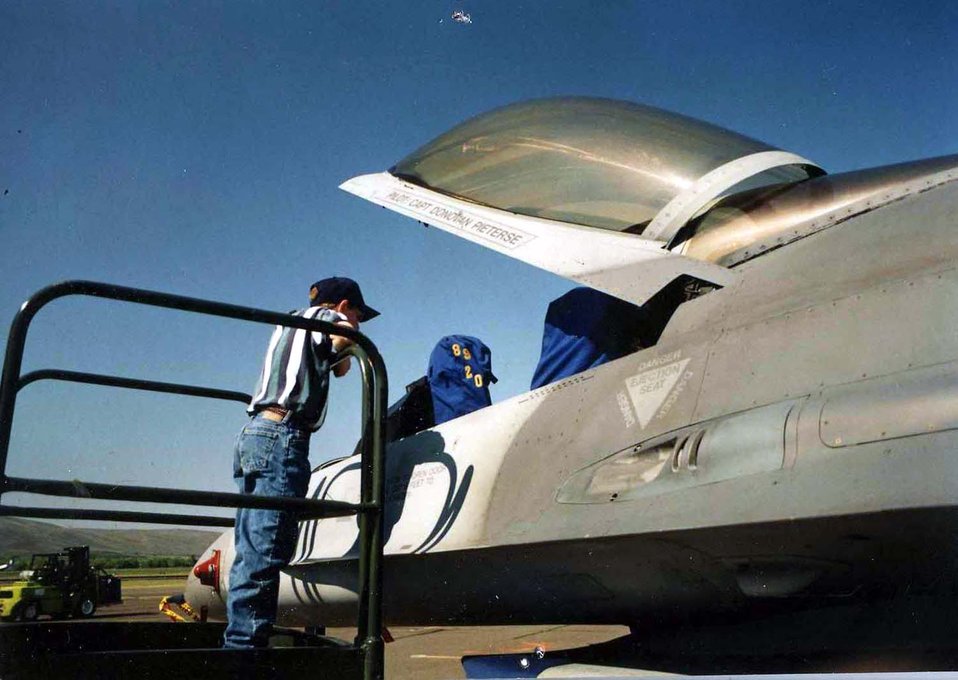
Crew chief meets childhood hero at Hill

Senior Airman Jeremy Meyers seen here at 9 years old looking into an F-16 Fighting Falcon at an airshow.